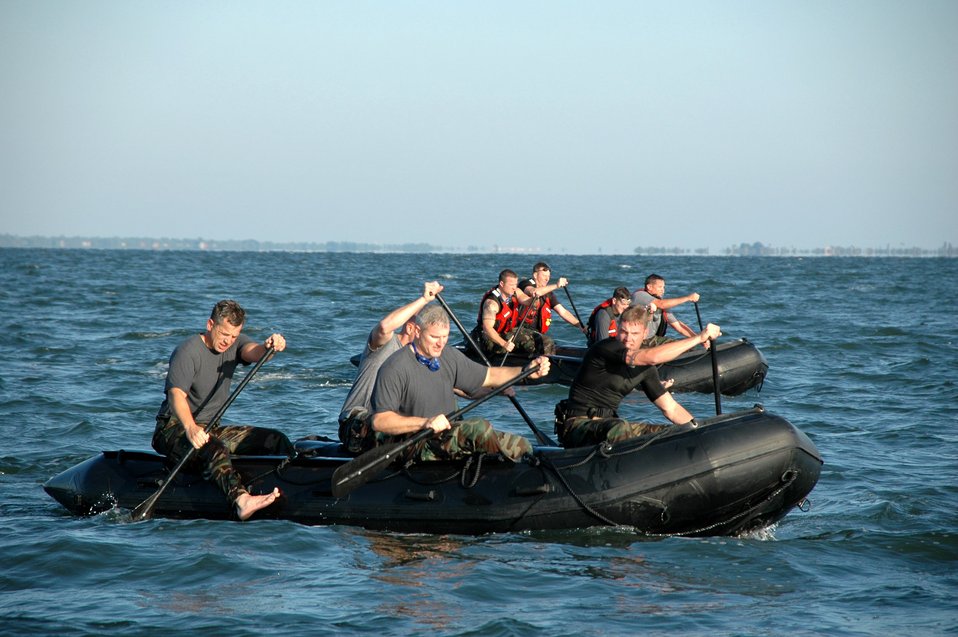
Mission Monster Mash builds camaraderie

Pararescueman from the 308th Rescue Squadron row inflatable boats to shore on the Banana River during an exercise at Patrick Air Force Base, Fla., Nov. 17.